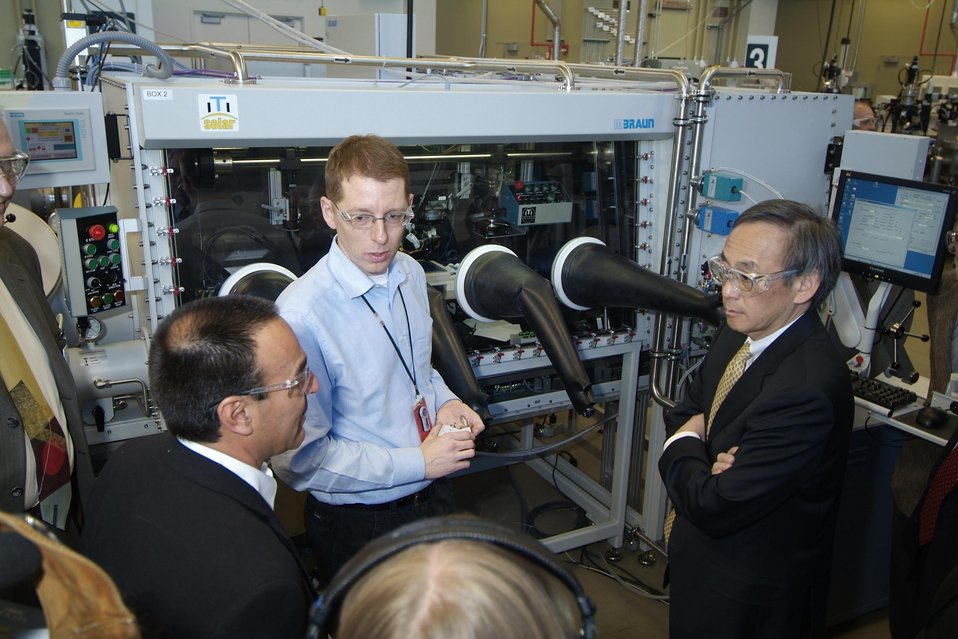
ENERGY SECRETARY STEVEN CHU LISTENS TO NREL SENIOR SCIENTISTS MIGUEL CONTRERAS AND MAIKEL VAN HEST DEMONSTRATE NEW INK-JET PRINTING TECHNOLOGY FOR THIN-FILM PHOTOVOLTAICS.